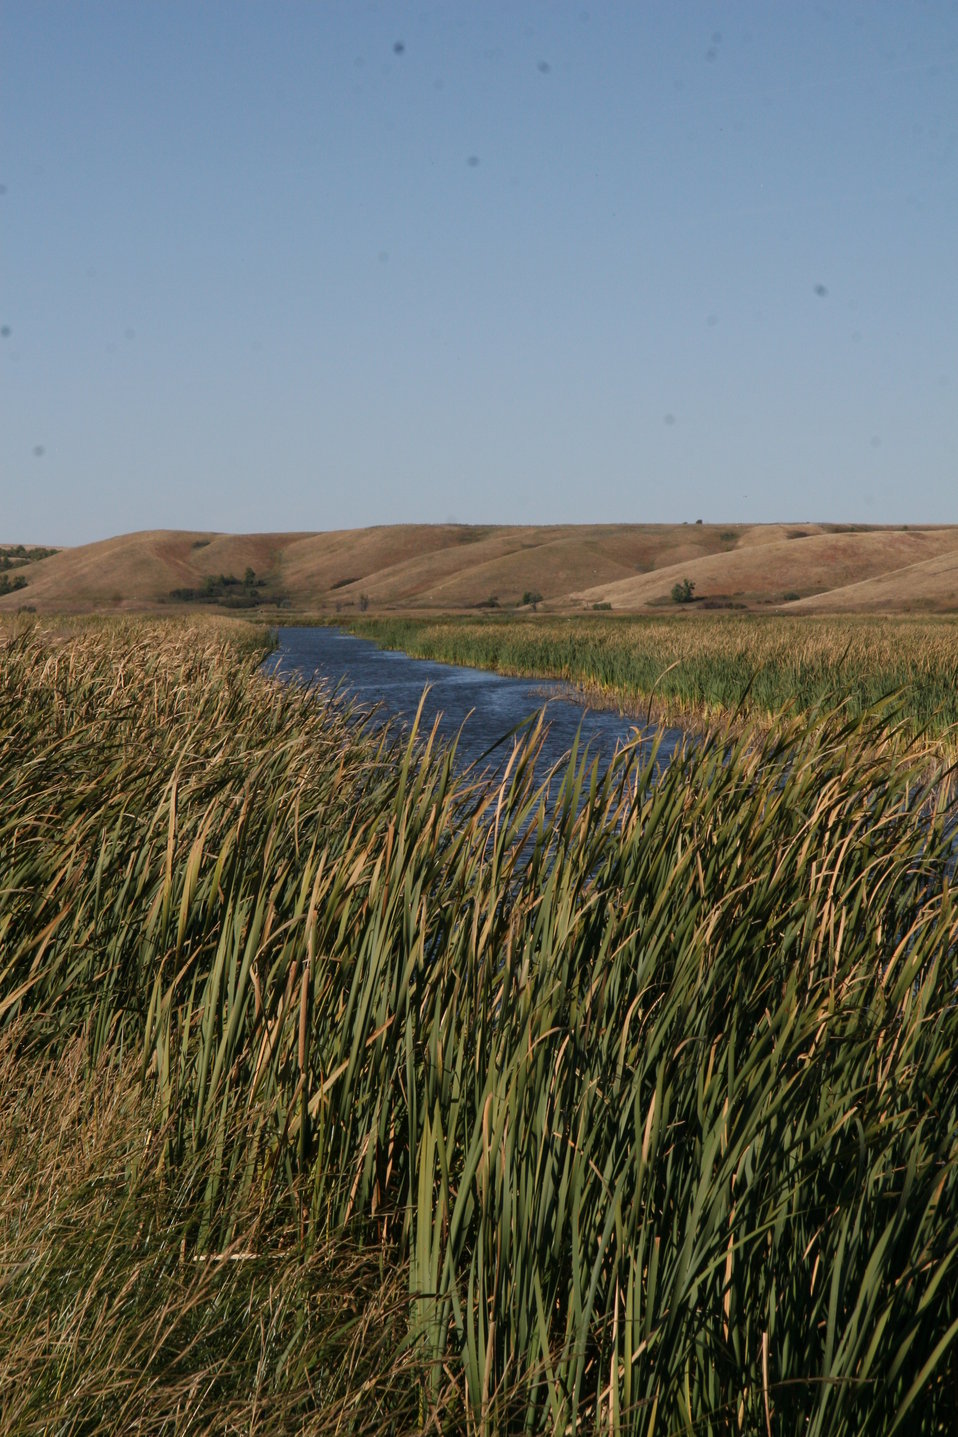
Fall Colors, Scenery & Wildlife on Des Lacs Refuge

Soon the cattails will turn a bright, firery orange!